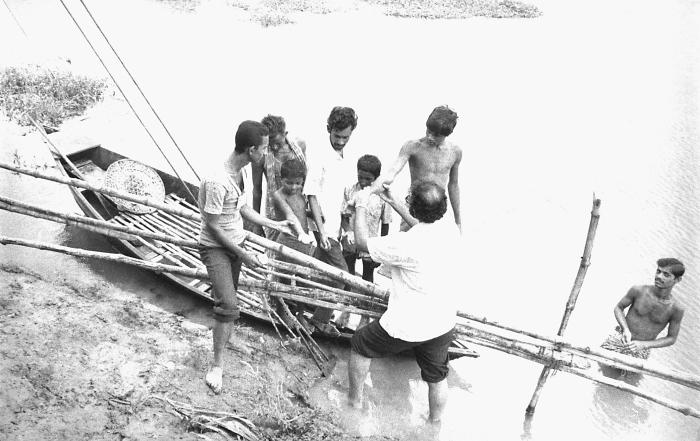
This image depicted World Health Organization (WHO) epidemiologists Dr. Ali Mourad, and an Egyptian associate examining a young man's arms, for signs of smallpox, which leaves scars on its sufferers, the severity of which is directly proportional to the severity of the disease, and the patient's age. However, the younger the patient, the more likely he'll be to loose such scars as he ages.In 1968, the WHO, and other world public health organizations - led by the United States and the then-Soviet Union - came together to join in the fight to eradicate smallpox from the world. The worldwide eradication of this dreaded virus was due to this Smallpox Eradication Campaign, whereupon, a mass-vaccination program was instituted across the globe that lead to the declaration in 1978 by a global commission that smallpox had been eradicated, which was officially accepted by the 33rd World Health Assembly in 1980. Smallpox is a serious, contagious, and sometimes fatal infectious disease.